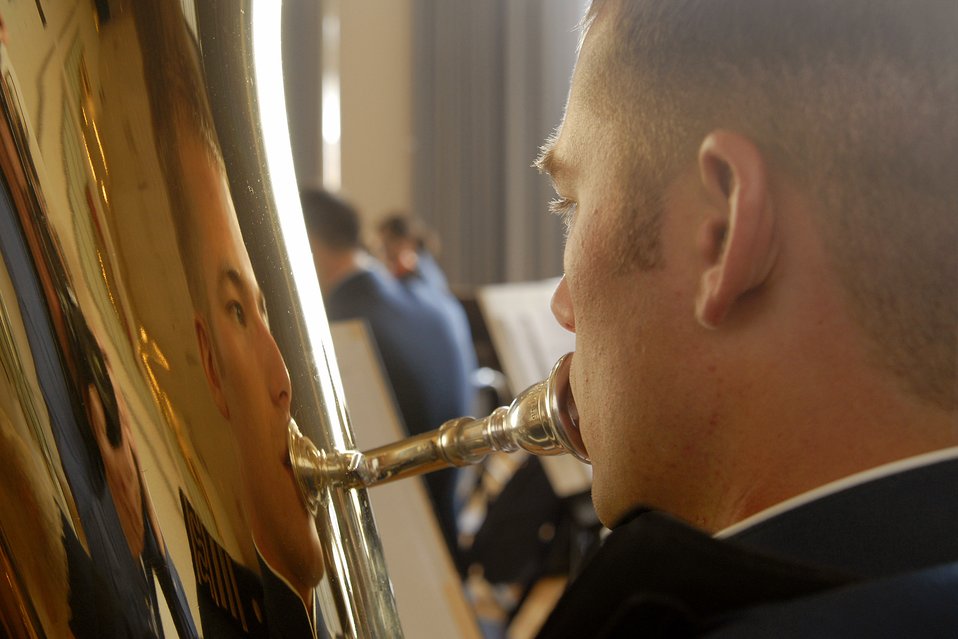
Saluting the sponsors

Air Force Academy Senior Zachariah Thuli plays the tuba during the cadet sponsor social held in Arnold Hall at the U.S. Air Force Academy in Colorado. The social honors the 3,500 cadet sponsors who open their hearts and homes to members of the cadet wing.